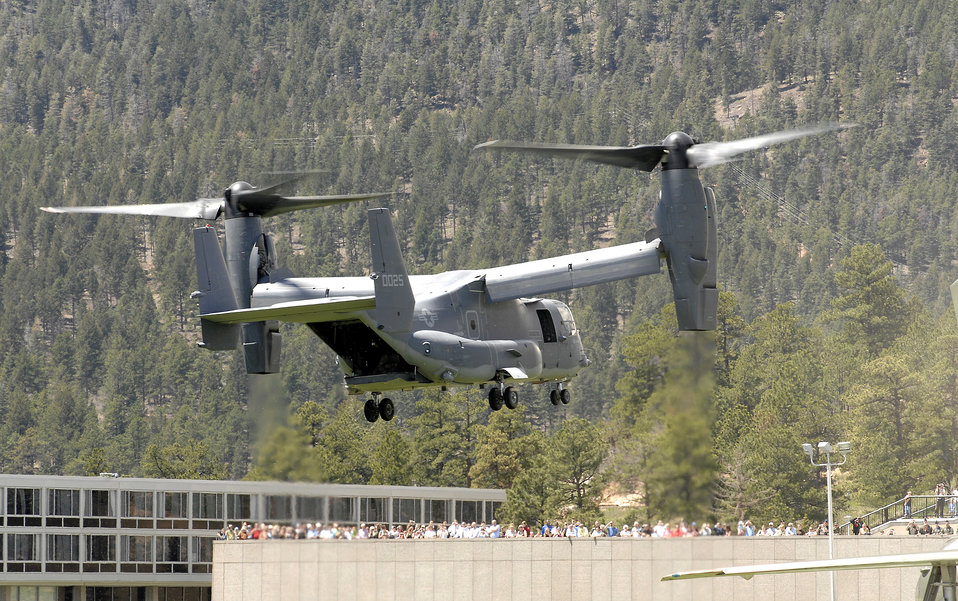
Osprey comes for a visit

A CV-22 Osprey prepares to land at the U.S. Air Force Academy May 11. Cadets in the Department of Aeronautical Engineering's High-Performance Computing Research Center contributed to making this aircraft an operational reality through their research in computational fluid dynamics.